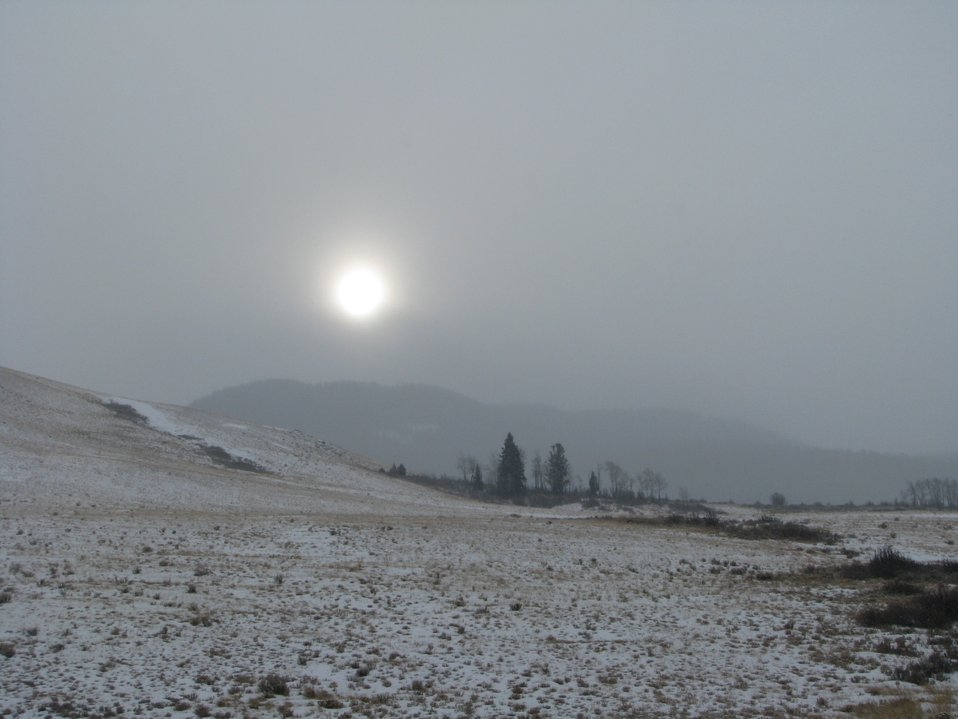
winter sky

National Elk Refuge, WY
January 2012